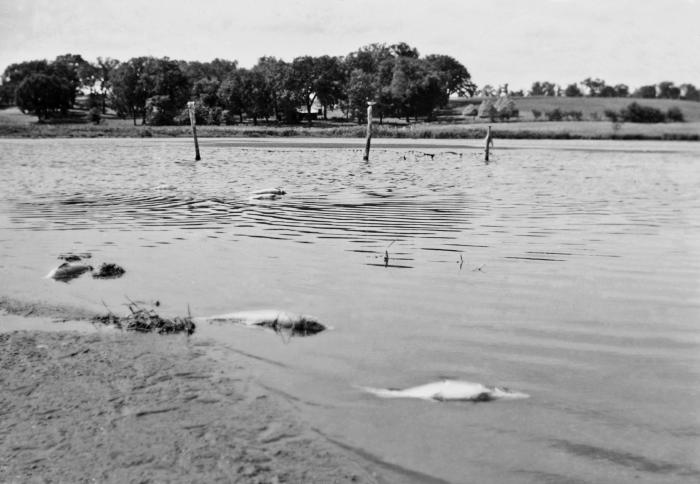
This historic August, 1937 photograph depicted a number of dead fish in Minnestoa's Cokato Lake at the outlet of the lake's main tributary, Sucker Creek. The purpose of the image was to show the effects of industrial pollution on bodies of freshwater, and the native fish and wildlife.